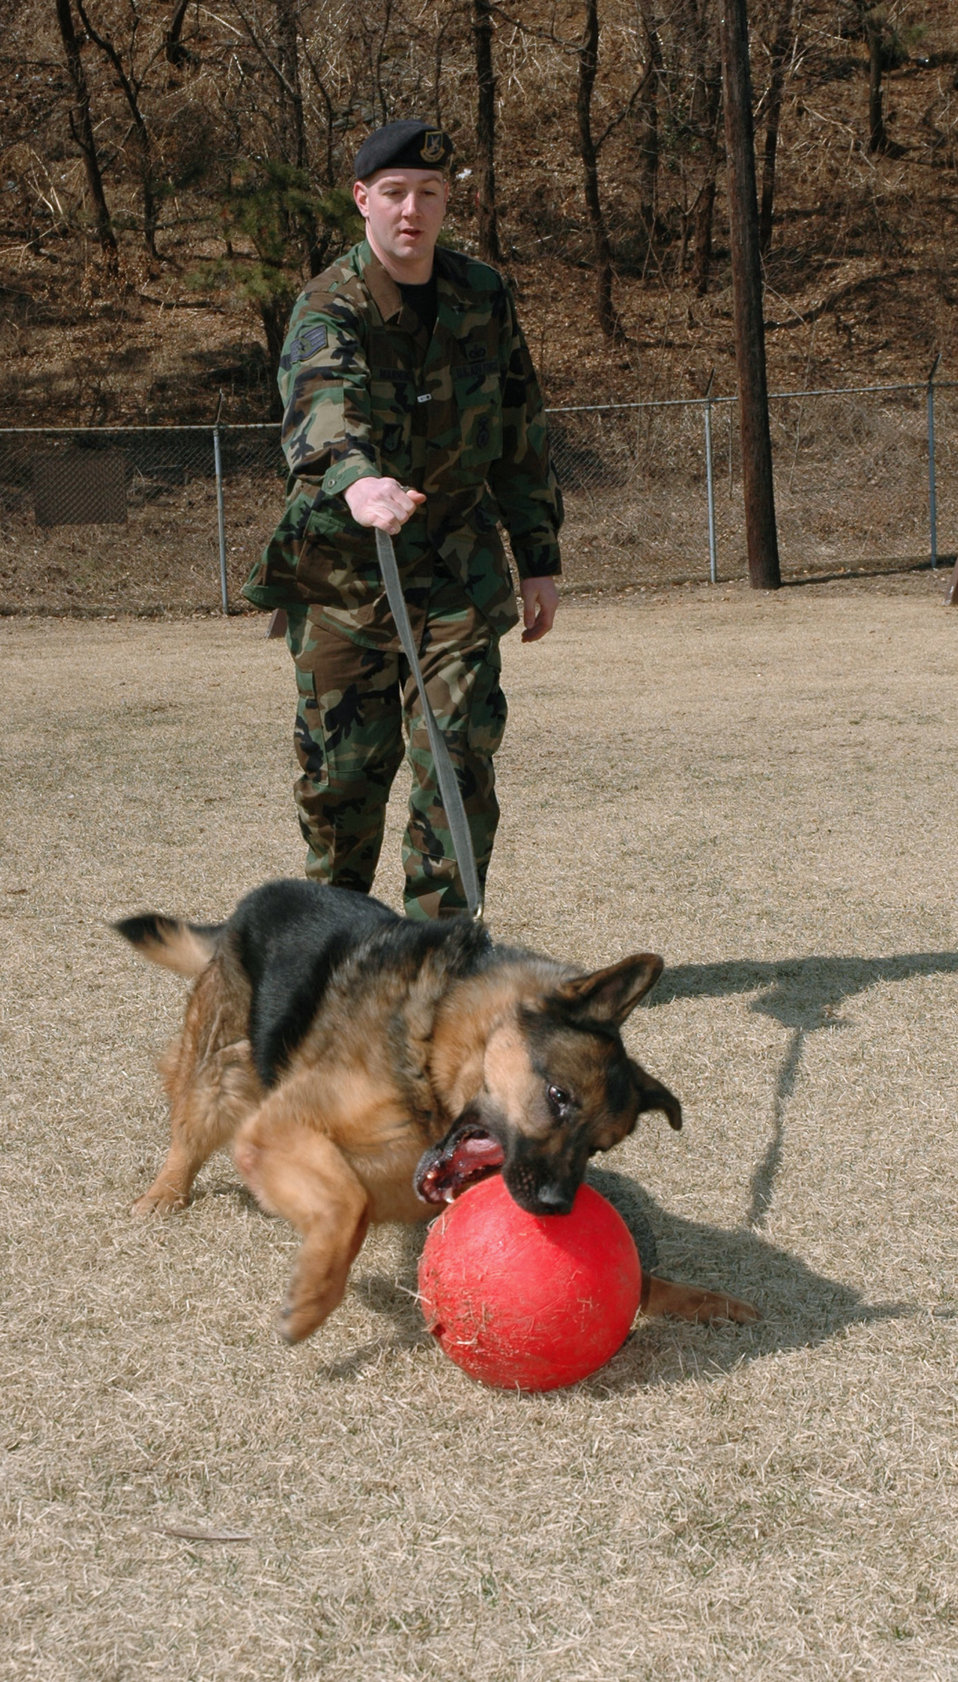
Military dogs dig into security

OSAN AIR BASE, South Korea -- Staff Sgt. Christopher Manning lets his military working dog, Britt, get a little recreation time in during a duty day here. Sergeant Manning is a 51st Security Forces Squadron military working dog handler. The dogs are highly trained to obey specific commands and for multiple tasks. The military working dog kennel here is the largest operational kennel in the Air Force.